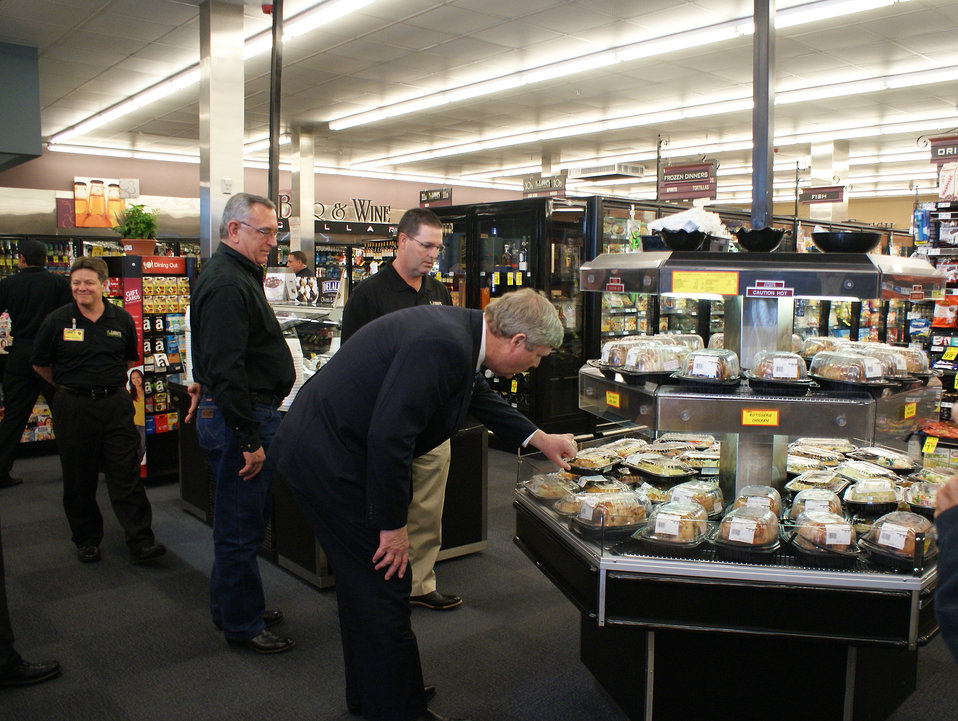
Agriculture Secretary Tom Vilsack examines cooked chicken at Lowe's Corner Market in Albuquerque, NM on Mar. 10, 2014.